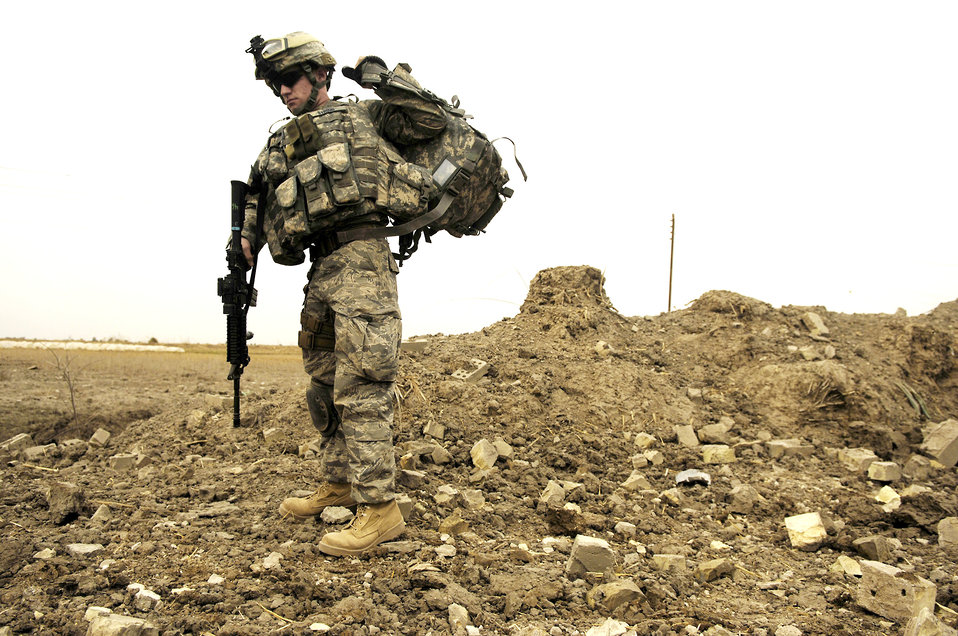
Command, control relationships critical to close-air-support mission

Airman 1st Class Daniel String puts his radio and gear on after a B-1B Lancer successfully dropped six GBU-38 munitions onto an al-Qaida torture house and prison in 2008 in northern Zambraniyah, Iraq. Airman String is a joint terminal attack controller.